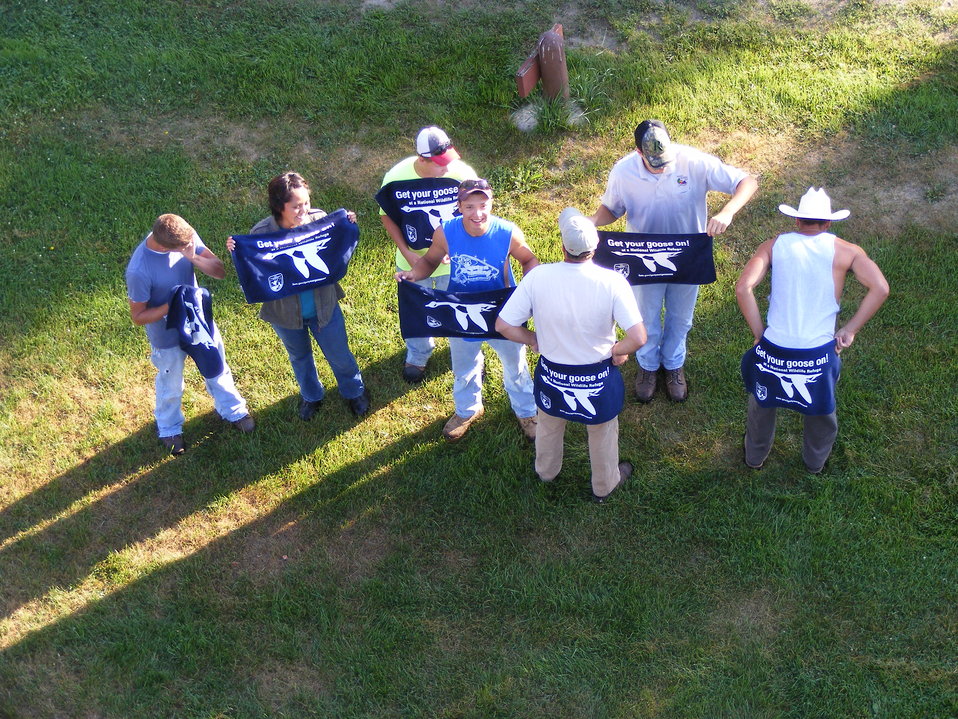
Get Your Goose On!

The Waubay National Wildlife Refuge summer crew poses for the camera.